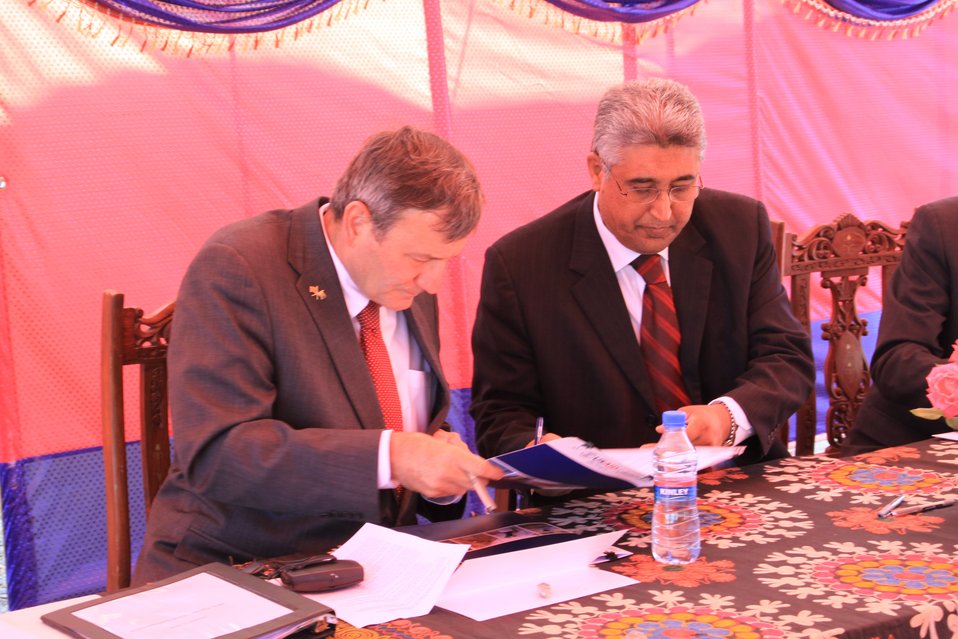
AVIPA Plus Wheat Seed Distribution 101005

US Ambassador Karl Eikenberry and USAID Acting Mission Director Kevin Brownawell joined the Minister of Agriculture, Irrigation and Livestock, H.E. Minister Mohammed Rahimi in signing a Memorandum of Understanding and distributing vouchers to area farmers for wheat and fertilizer.